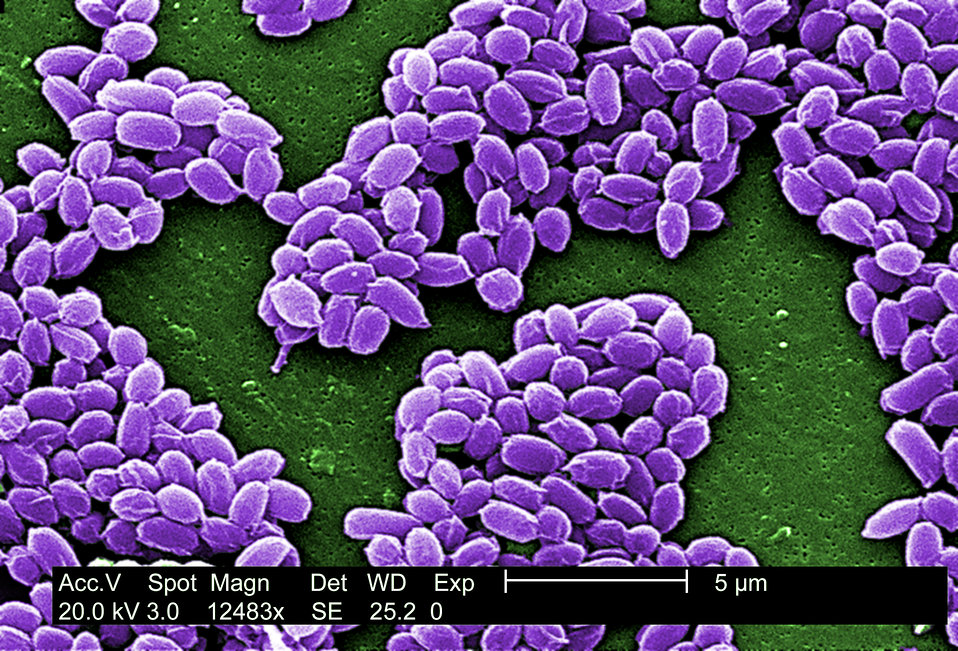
Under a high magnification of 12,483X, this scanning electron micrograph (SEM) depicted spores from the Sterne strain of Bacillus anthracis bacteria. For a black and white version of this image see PHIL 2267.